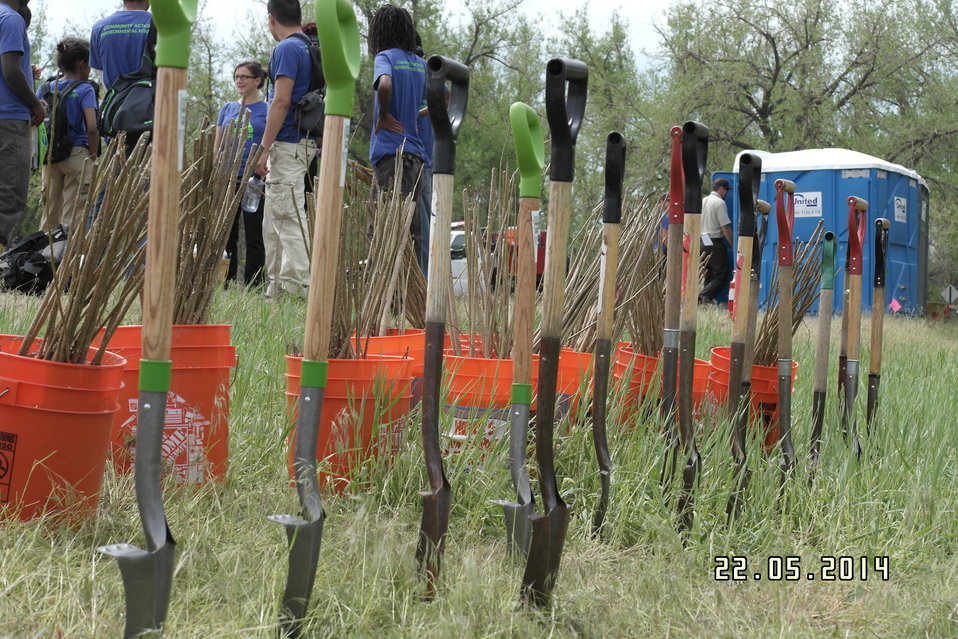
Secretary Jewell Announces $6.7 for Youth Conservation Job

Jewell made the announcement at an event at Rocky Mountain Arsenal National Wildlife Refuge outside Denver, Colorado, where she was joined by U.S. Department of Agriculture (USDA) Deputy Under Secretary for Natural Resources and the Environment Arthur “Butch” Blazer; Greg Knadle, Vice President for Government Relations of the National Fish and Wildlife Foundation (NFWF); Refuge Manager David Lucas and youth corps members of Groundwork Denver.